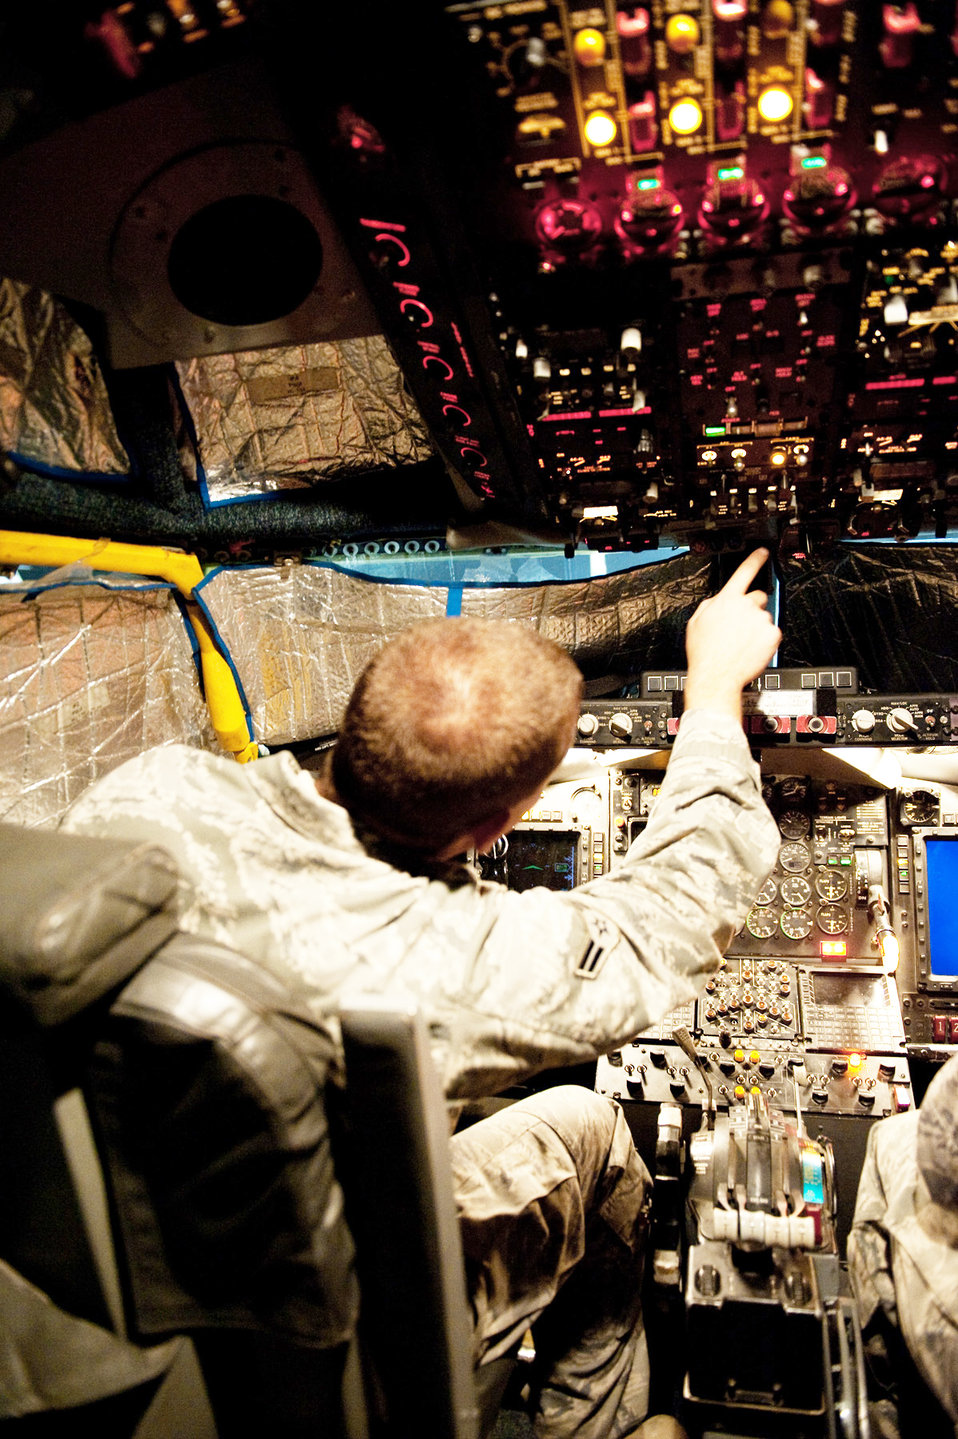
Unit surpasses consecutive 7,000 days with forces in Southwest Asia

Airman 1st Class Jeremy Lowe conducts a post-flight inspection on a RC-135V/W Rivet Joint Oct. 7, 2009, at an air base in Southwest Asia. Airman Lowe helped mark Oct. 7 as the 7,000th consecutive day the RC-135 has provided commanders in the U.S. Central Command area of responsibility near real-time on-scene intelligence collection, analysis and dissemination. Airman Lowe is assigned to the 55th Aircraft Maintenance Unit deployed from Offutt Air Force Base, Neb.